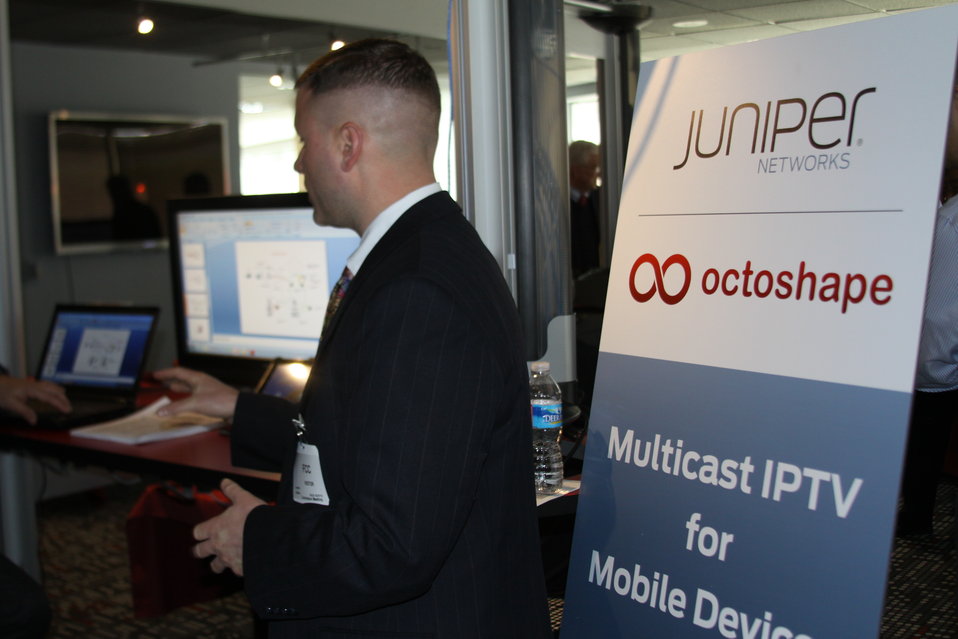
Technology Experience Center Demonstration